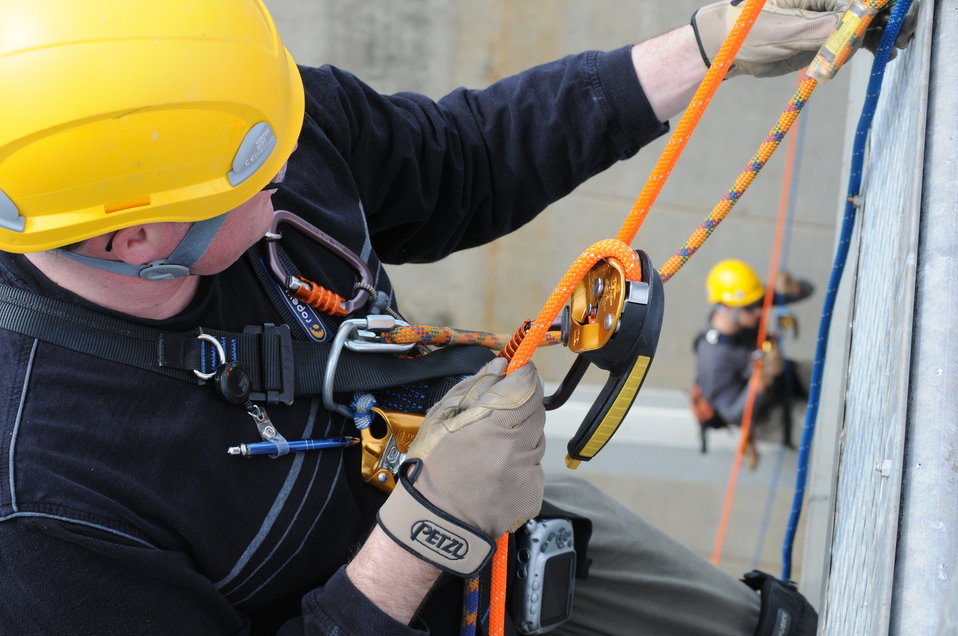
Corps’ engineers climb, inspect New Hogan Dam

Levi Bowers (left) and Christopher Abela, engineers and climb team members with the U.S. Army Corps of Engineers Sacramento District, inspect the tainter gates at New Hogan Dam near Valley Springs, Calif., April 10, 2012. Tainter gates are a type of flood gate used in dams to control water flow. New Hogan Dam reduces flood risk to the city of Stockton and stores water used for irrigation, drinking and hydroelectric power.